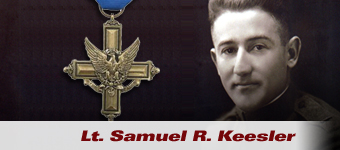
Lt. Samuel Keesler

Lt. Samuel R. Keesler, an aerial observer during World War I, was posthumously awarded the Distinguished Service Cross.